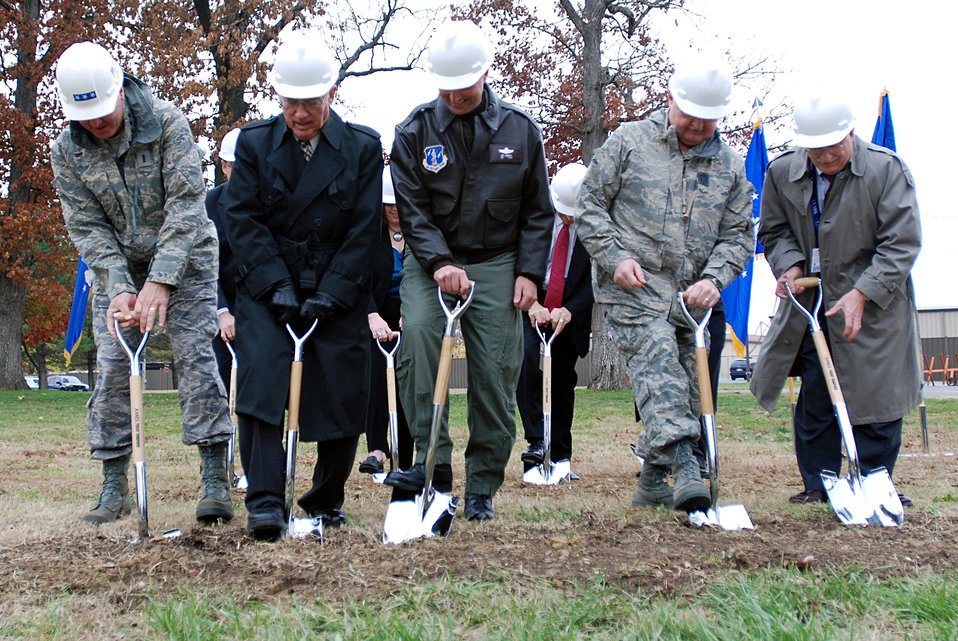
Air Guard Breaks Ground for Expanded Readiness Center

From left, Air National Guard Director Lt. Gen. Craig McKinley, retired Lt. Gen. John Conaway, Readiness Center (ANGRC) Commander Col. Joe Lengyel, Air Guard Command Chief Master Sgt. Richard Smith, and Mr. J.L. Herndon break ground on an ANGRC expansion project Nov. 19 at Andrews Air Force Base, Md.